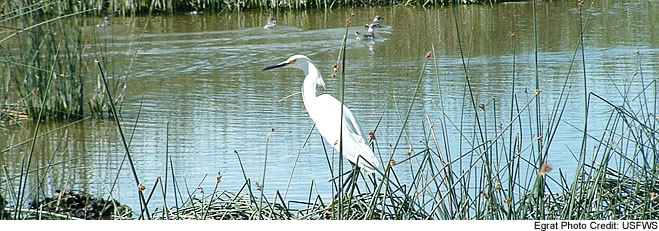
Bear Lake National Wildlife Refuge - Egret

A white egret in the rushes alongside the waters of the Bear Lake National Wildlife Refuge, which provide nesting habitat to many different kinds of waterfowl and migratory birds.